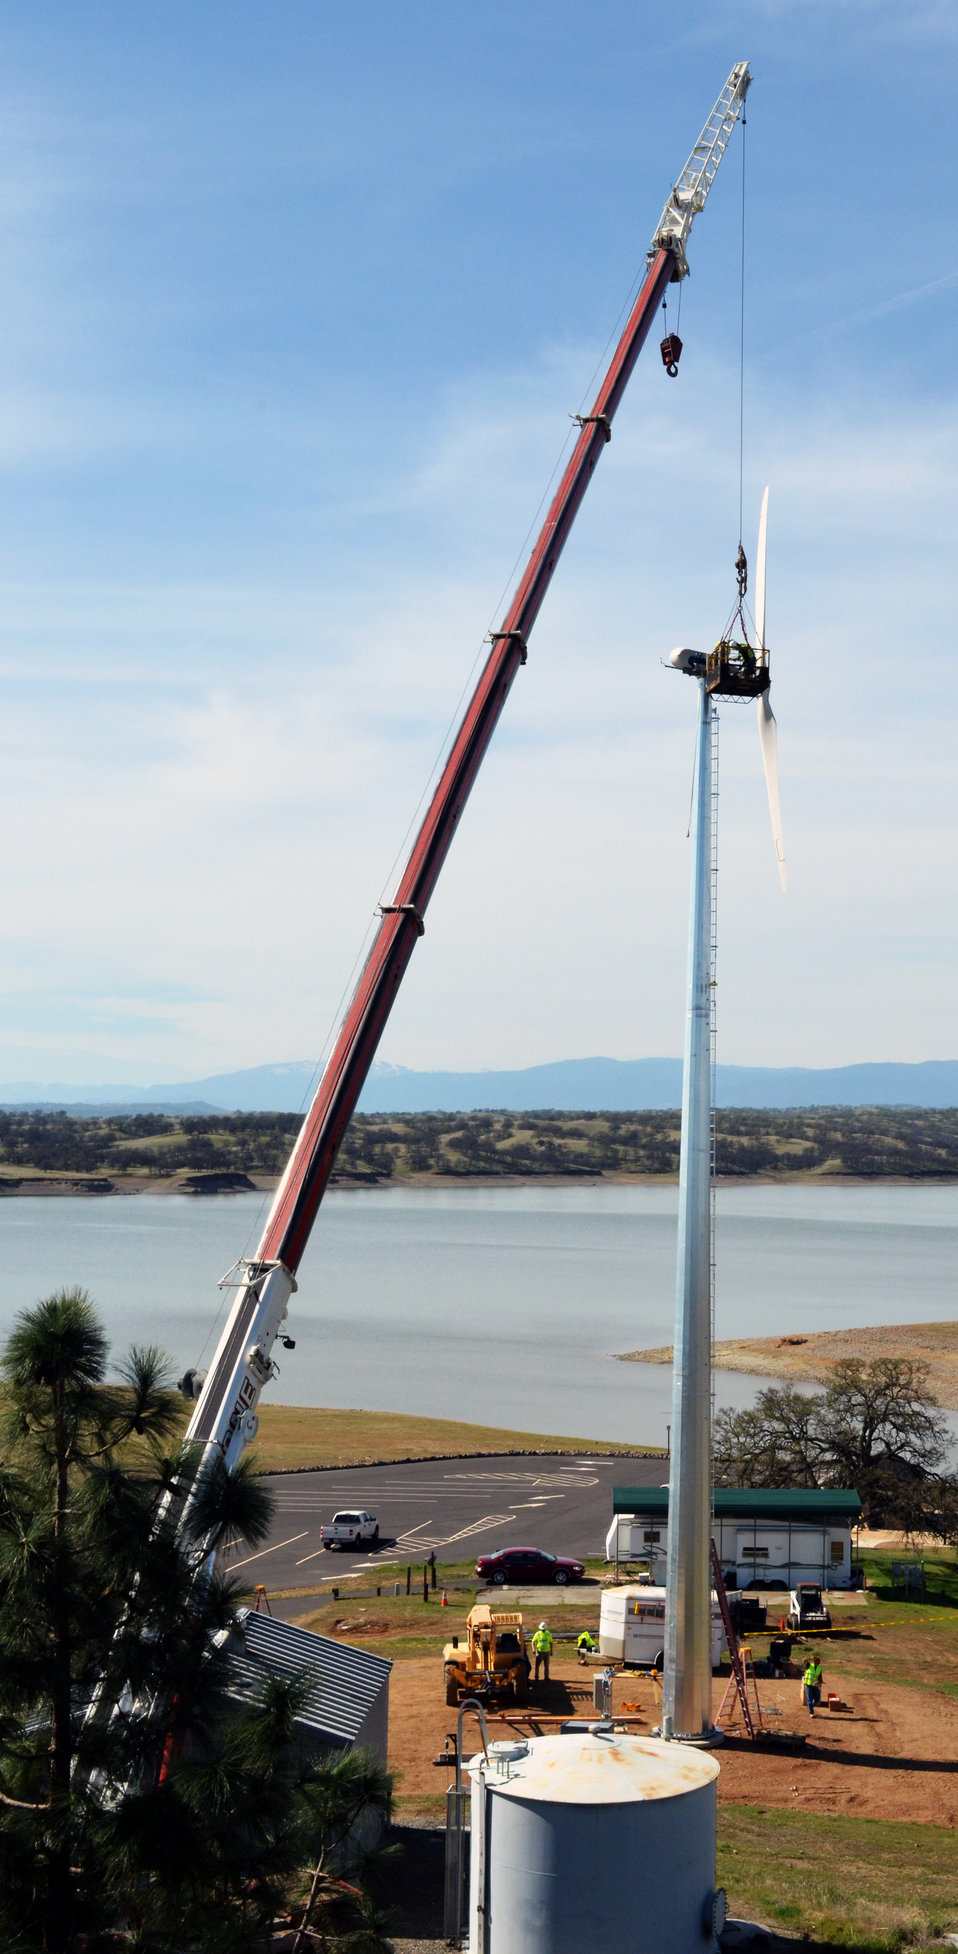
Powerful view

Once it is made operational, campers will see -- but barely hear -- this wind turbine at Black Butte Lake, the U.S. Army Corps of Engineers Sacramento District park near Orland, Calif. Final assembly of the wind turbine took place March 13, 2013 and is expected to go online within 30 days. The turbine can generate 11 kilowatts of energy and will help supply campers’ power needs.